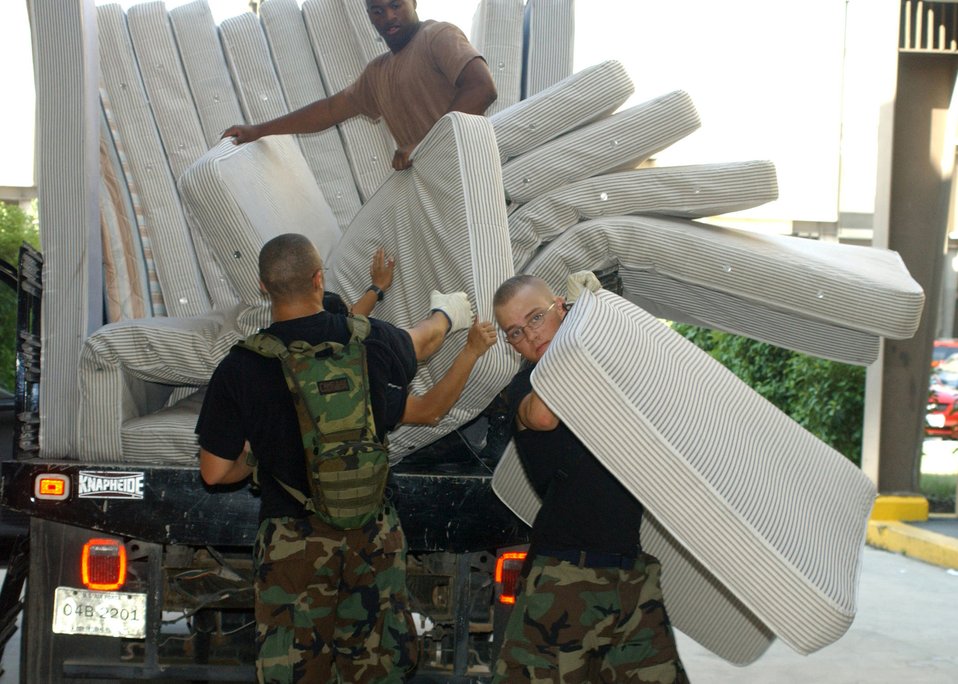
Evacuation preparation

LACKLAND AIR FORCE BASE, Texas -- Airmen unload mattresses Sept. 22 in preparation to bed down Hurricane Rita evacuees from the Gulf Coast who will be housed in empty dormitories here.